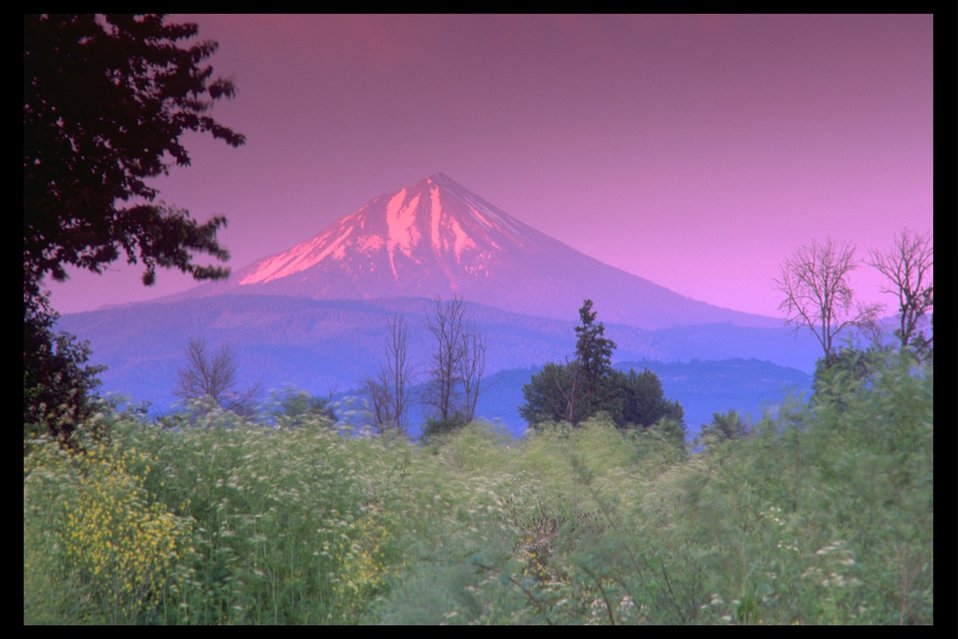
Alpine Glow on Mount McLaughlin.